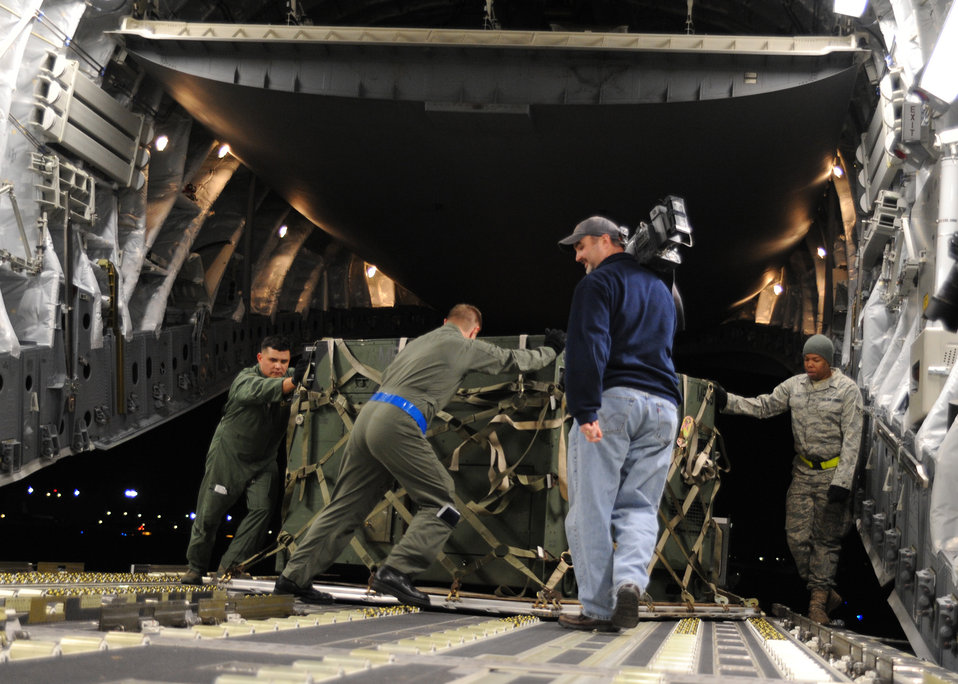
Haiti Humanitarian Effort

Airmen load equipment onto a Charleston C-17 at Joint Base McGuire-Dix-Lakehurst, New Jersey, Jan. 15, 2010. The Charleston C-17 was used to transport equipment needed to aid the humanitarian effort in Haiti.